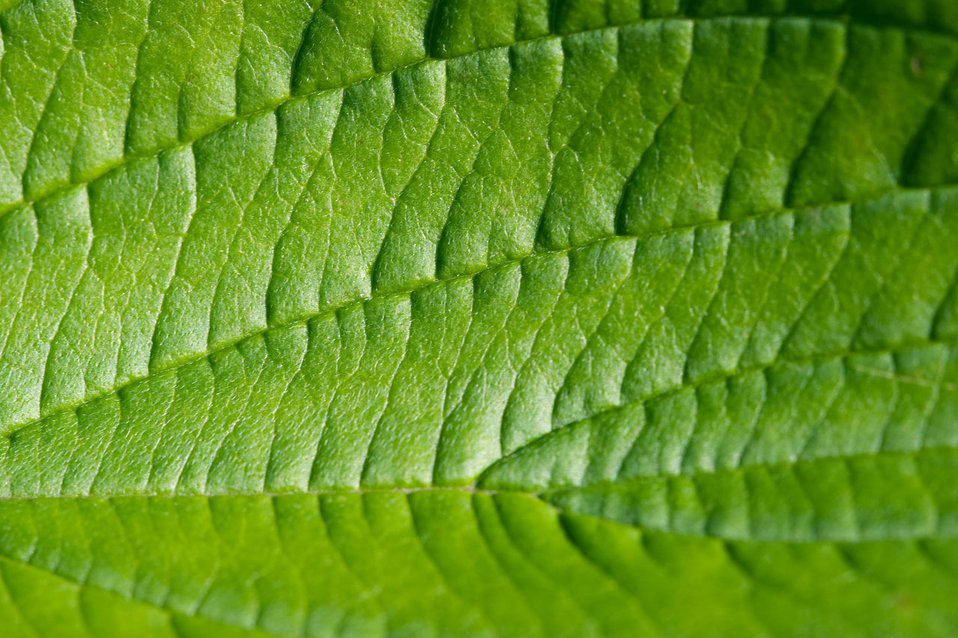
Leaf

Macro picture of a leaf.